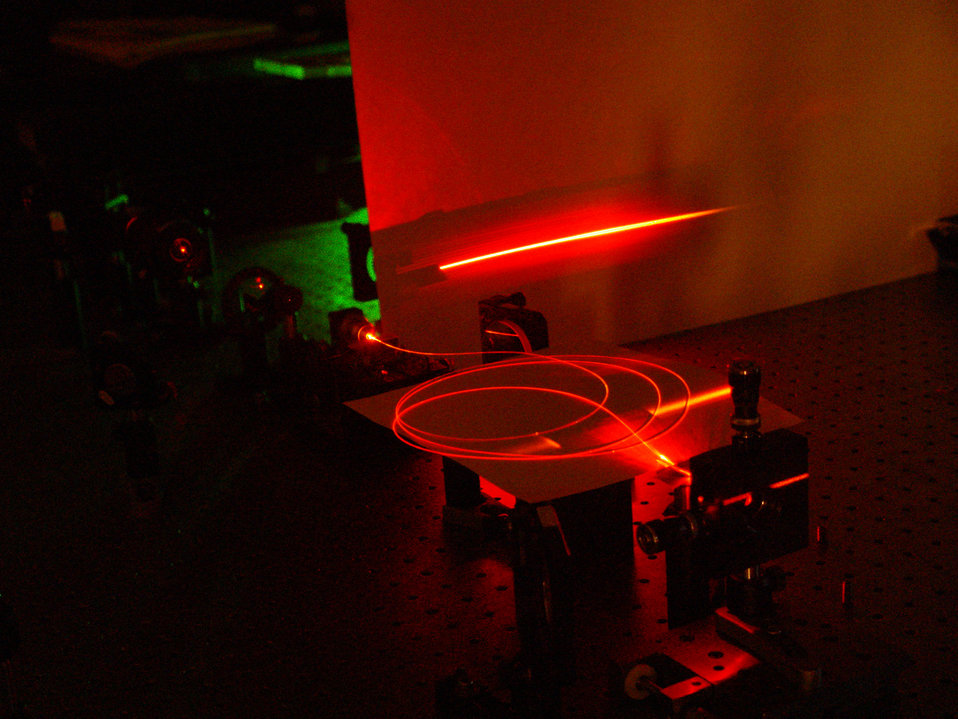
Mass Weddings. NIST's New Efficient 2-Photon Source

A microstructured optical fiber in NIST's new paired-photon source delivers high numbers of photon pairs over a broad bandwidth with low noise, all in a compact device for quantum communication devices.